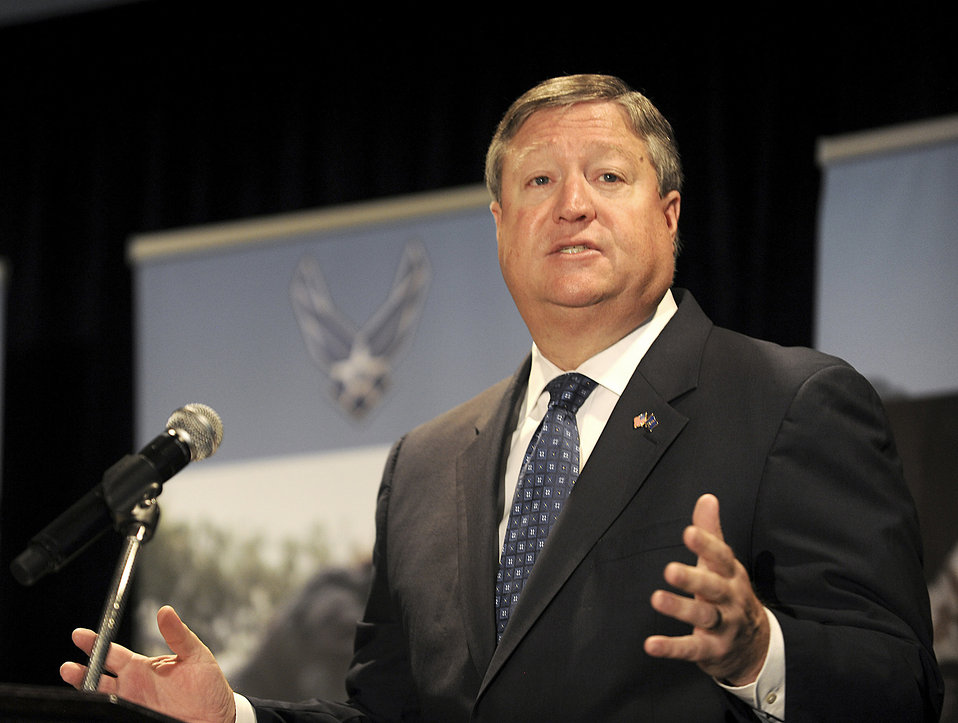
Air Force Caring for People forum begins

Secretary of the Air Force Michael Donley speaks to attendees at the Caring for People forum July 19, 2011, in Arlington, Va. The three-day forum brings Air Force professionals from across the service together to discuss ways to improve support programs and services available to Airmen and their extended families.